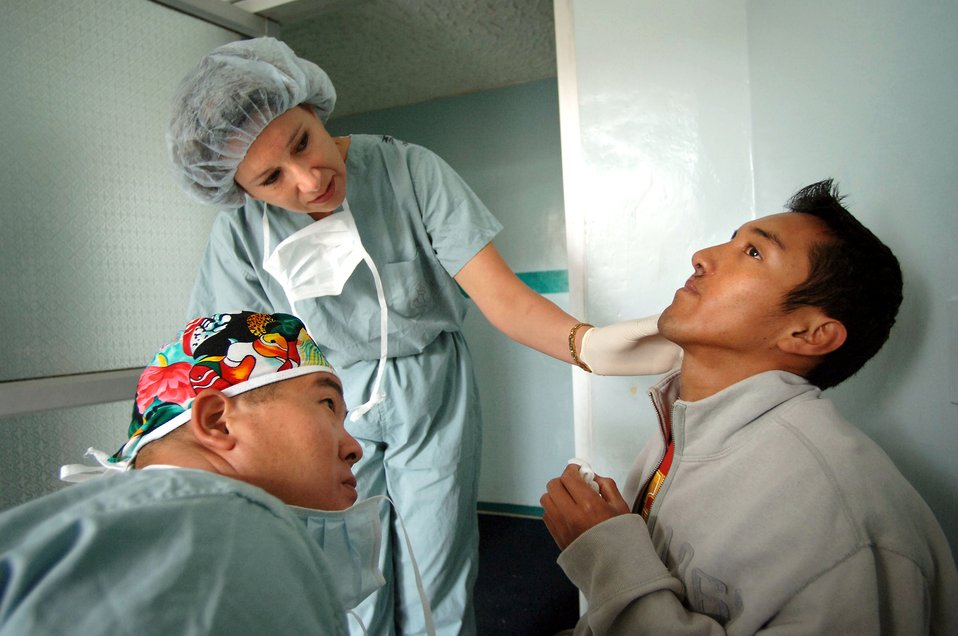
Air Force medics conduct plastic surgery clinic

CUENCA, Ecuador -- Col. (Dr.) Gary Arishita and Maj. Patricia Bradshaw remove the bandages and examine Juan Morocho one week after they corrected a deviated septum in his nose. A seven-person plastic surgery team from Wilford Hall Medical Center at Lackland Air Force Base, Texas, is providing free corrective surgeries to Ecuadorian civilians as part of a 12-day medical readiness training exercise.